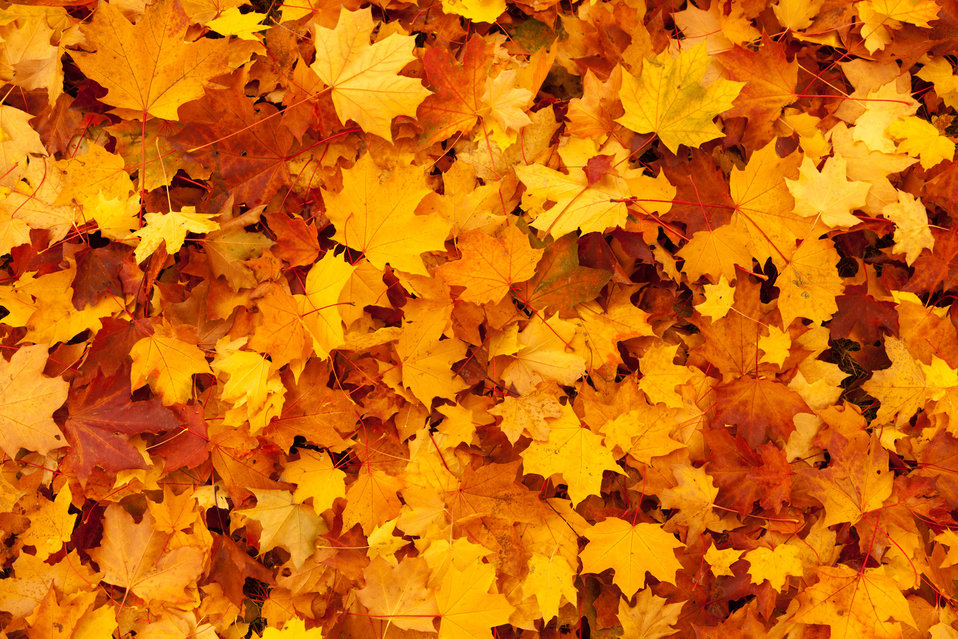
Maple leaves background

Yellow maple leaves autumn background image.